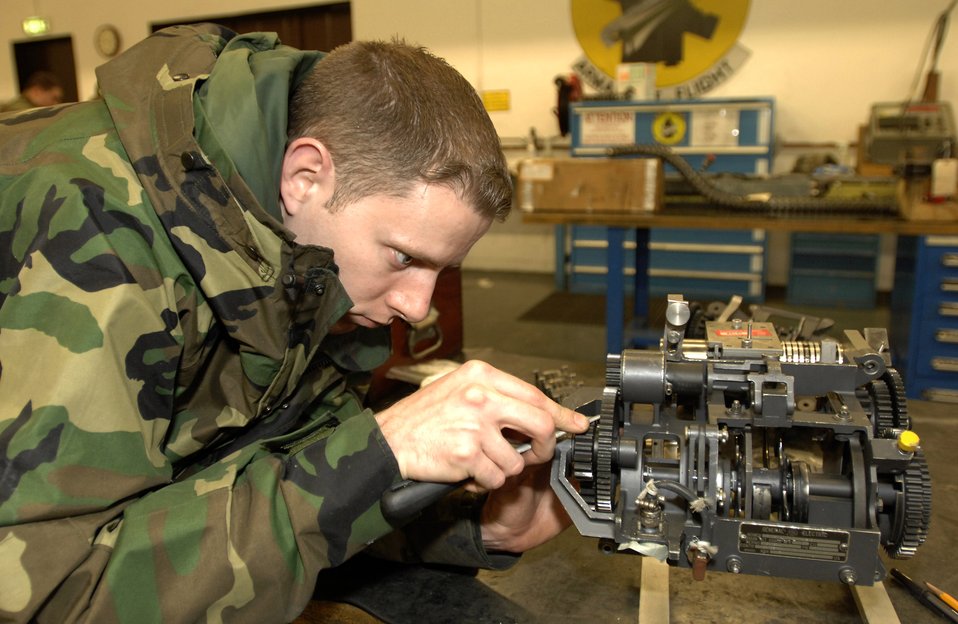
Attention to detail

Staff Sgt Tony Simper works on an F-16 Fighting Falcon gun system Feb. 6 at Aviano Air Base, Italy. Sergeant Simper is an aircraft armament system craftsman with the 31st Maintenance Squadron Armament Flight. The flight is responsible for the maintenance of F-16 weapons systems.